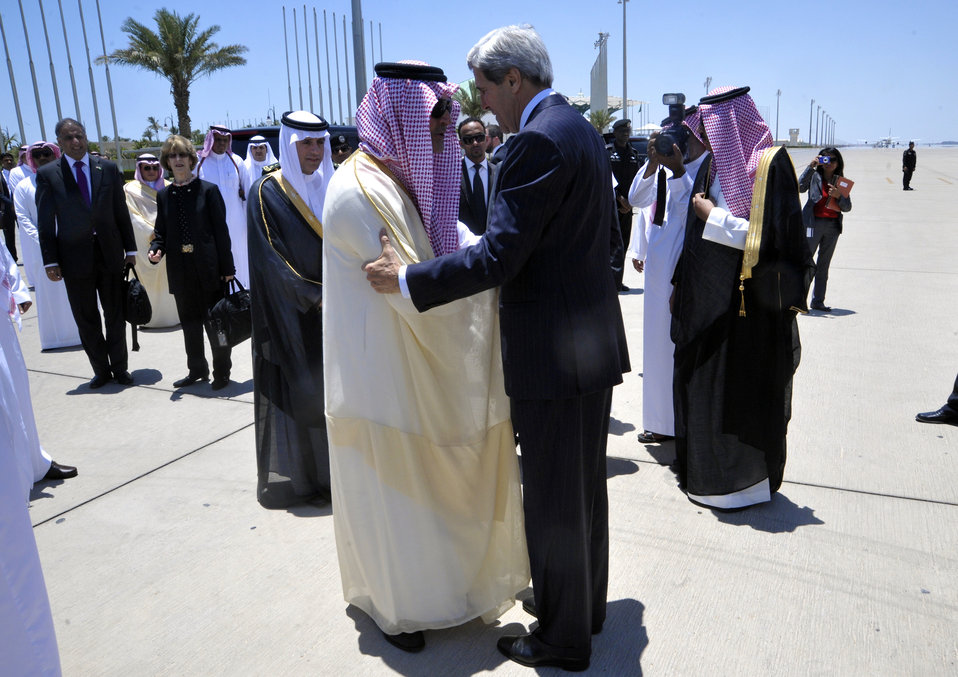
Secretary Kerry Is Greeted by Saudi Foreign Minister al-Faisal

U.S. Secretary of State John Kerry is greeted by Saudi Foreign Minister Prince Saud al-Faisal upon his arrival in Jeddah, Saudi Arabia, on June 25, 2013.